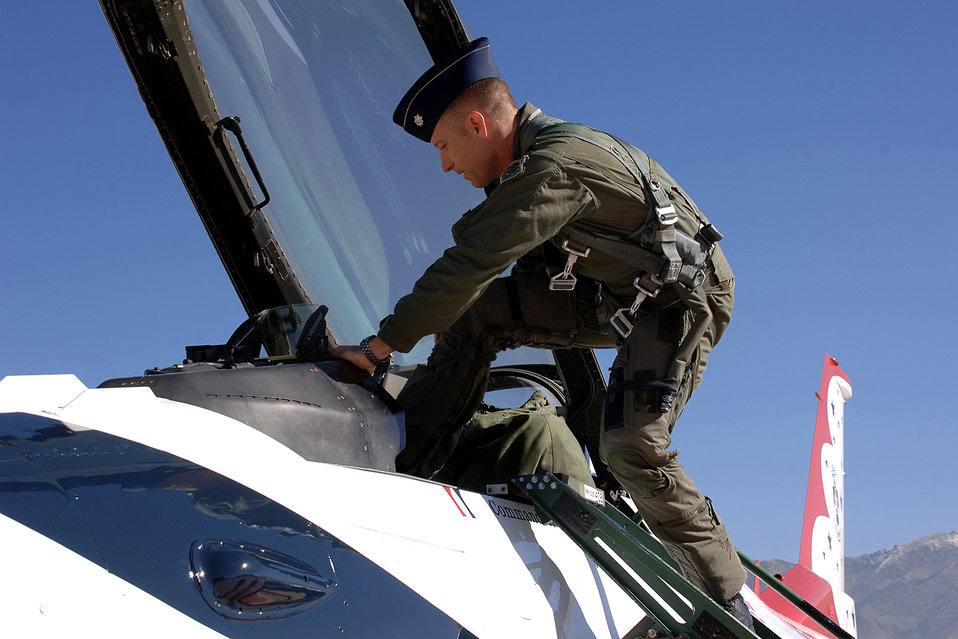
Thunderbirds receive first upgraded F-16

Lt. Col. Greg Thomas climbs into his newly upgraded F-16 Fighting Falcon Oct. 24 at Hill Air Force Base, Utah. Eleven of the upgraded aircraft are destined for the U.S. Air Force Thunderbirds aerial demonstration team and are slated for delivery for the 2009 show season. Colonel Thomas is the incoming 2008-2009 Thunderbird commander and lead pilot.